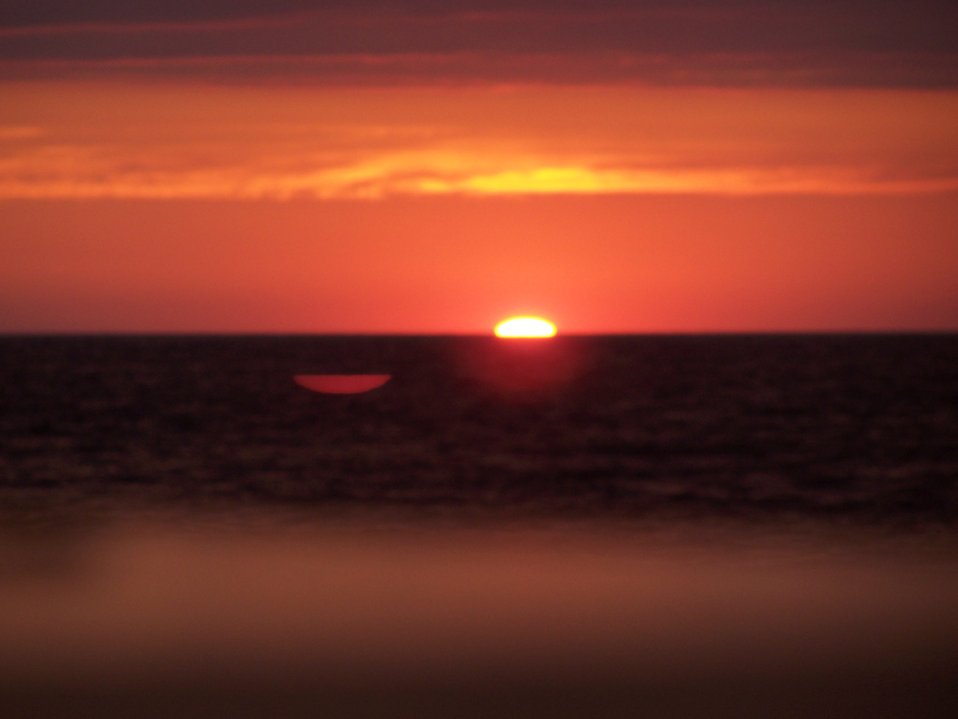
Sunset.